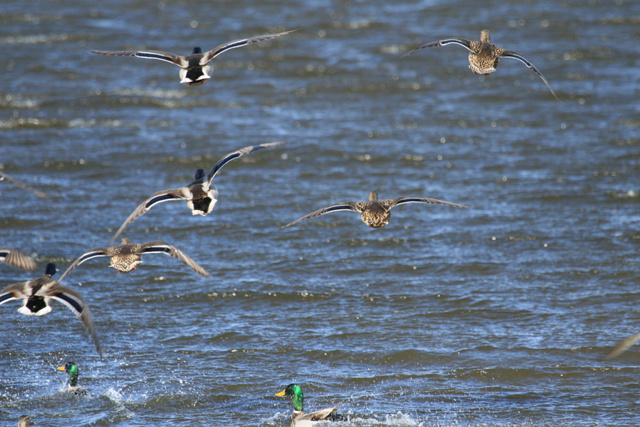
Mallards